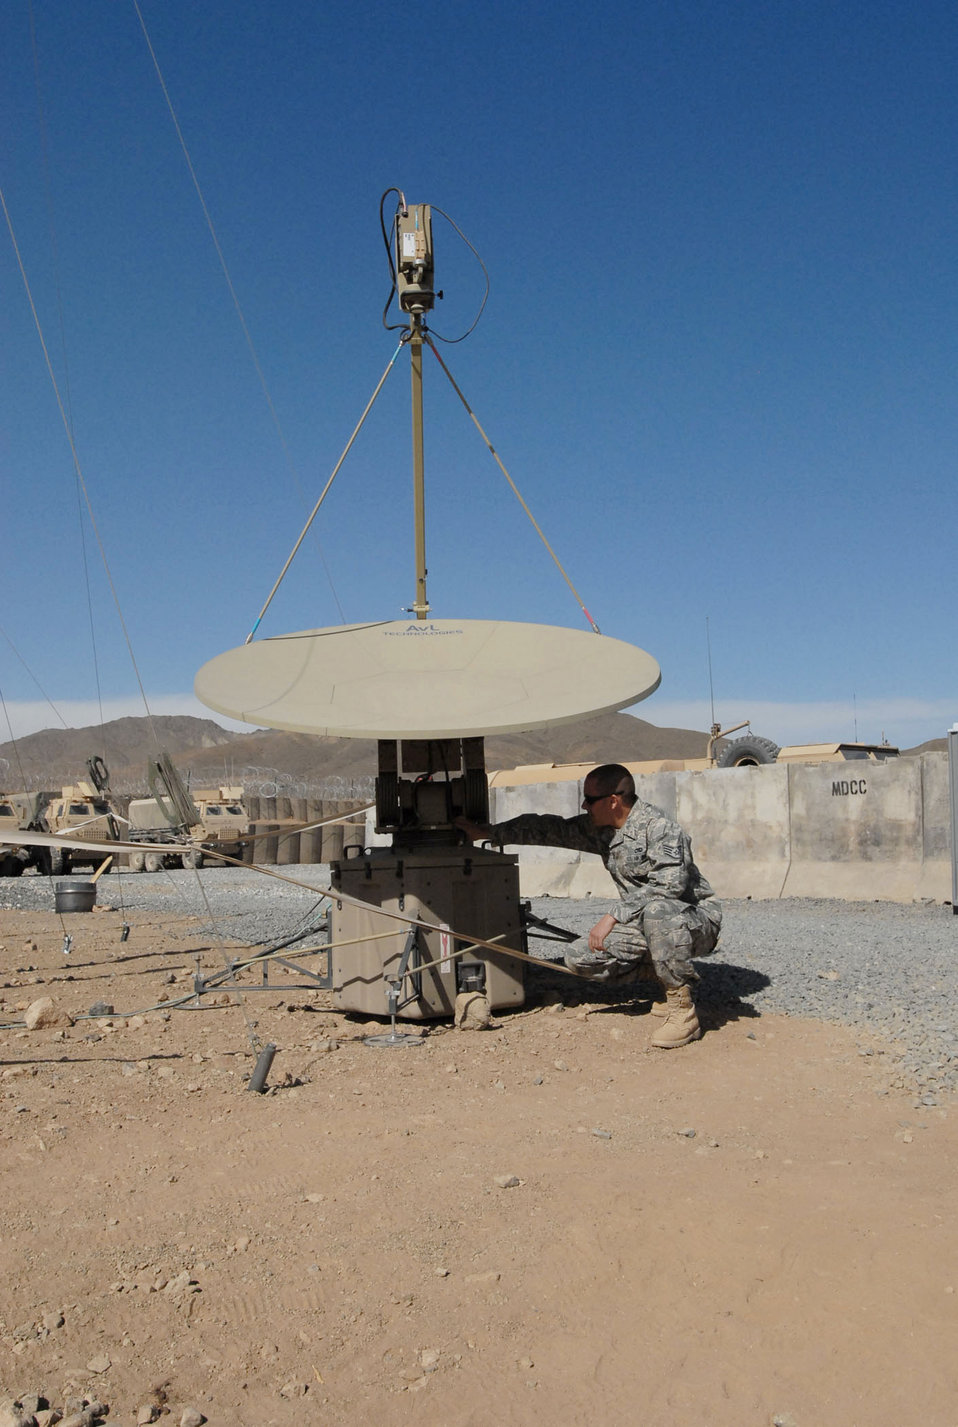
Airman helps Army get connected

Staff Sgt. Jeremy Emond inspects the satellite dish of the virtual secure Internet protocol router, nonsecure Internet protocol router access point system installed Oct. 14, 2009, at Combat Oupost McClain in Afghanistan. Sergeant Emond operates the VSNAP to free up more Soldiers for combat operations.